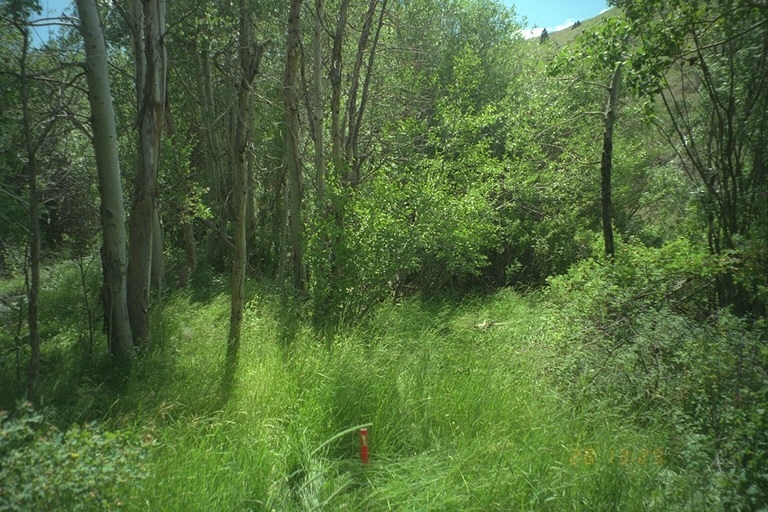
Riparian area Public Lands Salmon Field Office UCSC Upper Columbia Salmon Clearwater District